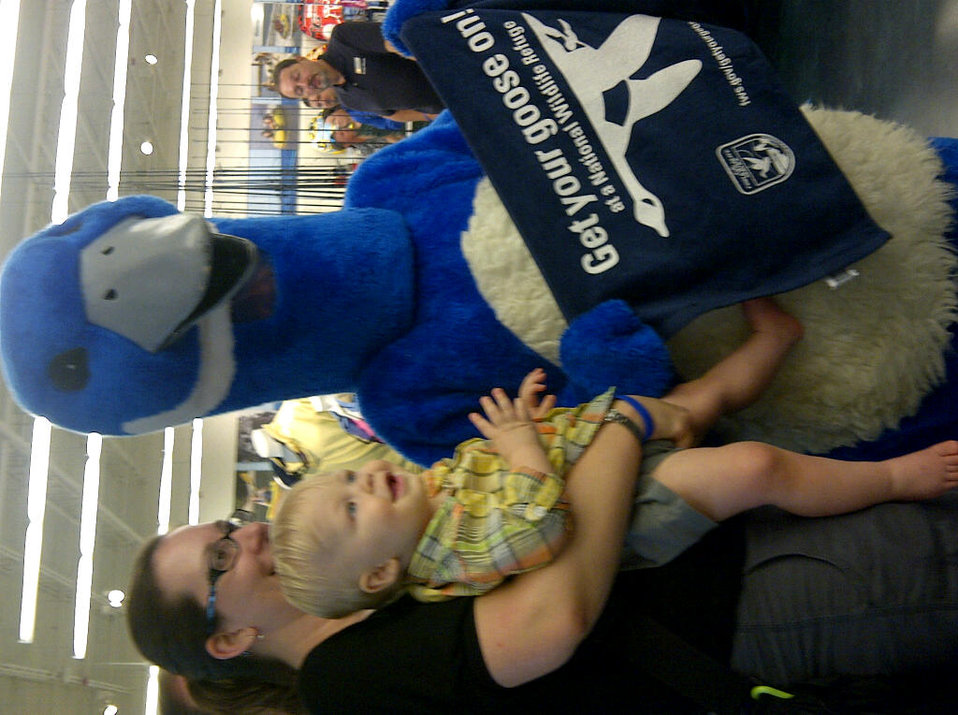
Get Your Goose On!